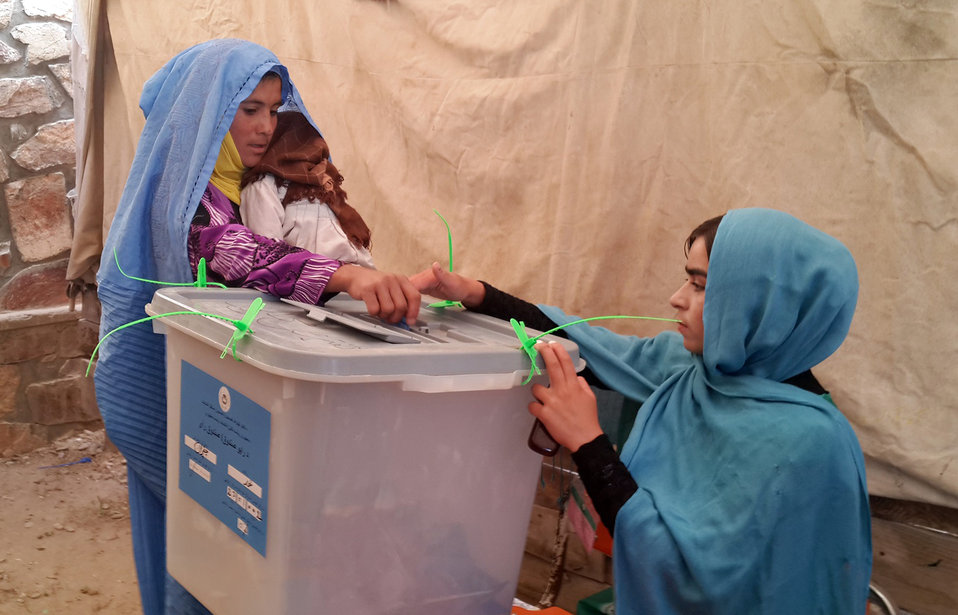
A woman casts her ballot in Ghor province.